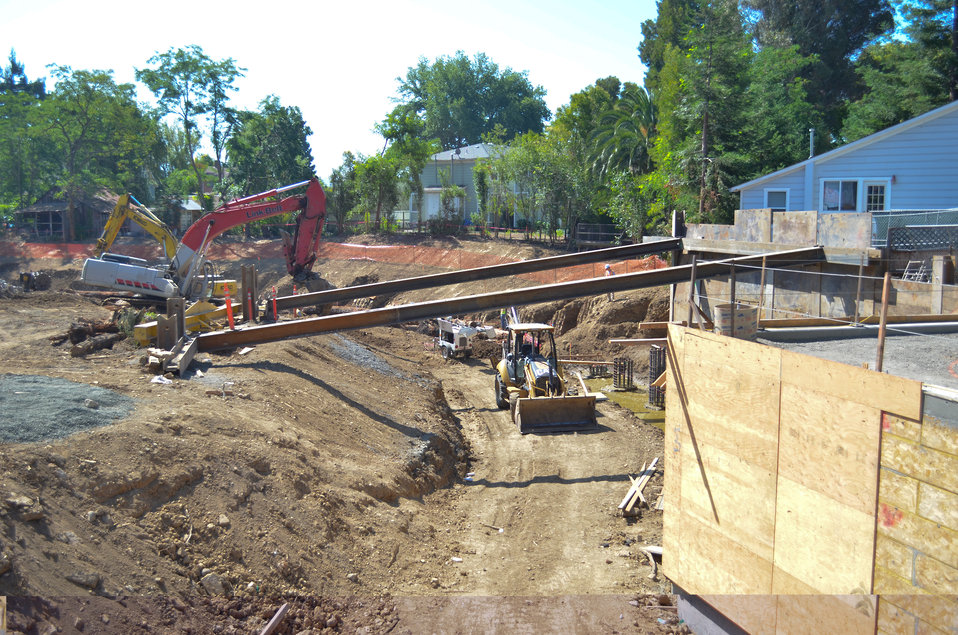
Crews widen Napa Creek and anchor tree trunks

Construction crews widen Napa Creek and anchor tree trunks to the bottom of the dried creek bed for habitat restoration in Napa, Calif., July 10, 2012. The U.S. Army Corps of Engineers Sacramento District is partnering with the city of Napa, and the Napa Flood Control and Water Conservation District to complete the $14.8 million flood risk reduction project, funded by the American Recovery and Reinvestment Act of 2009.